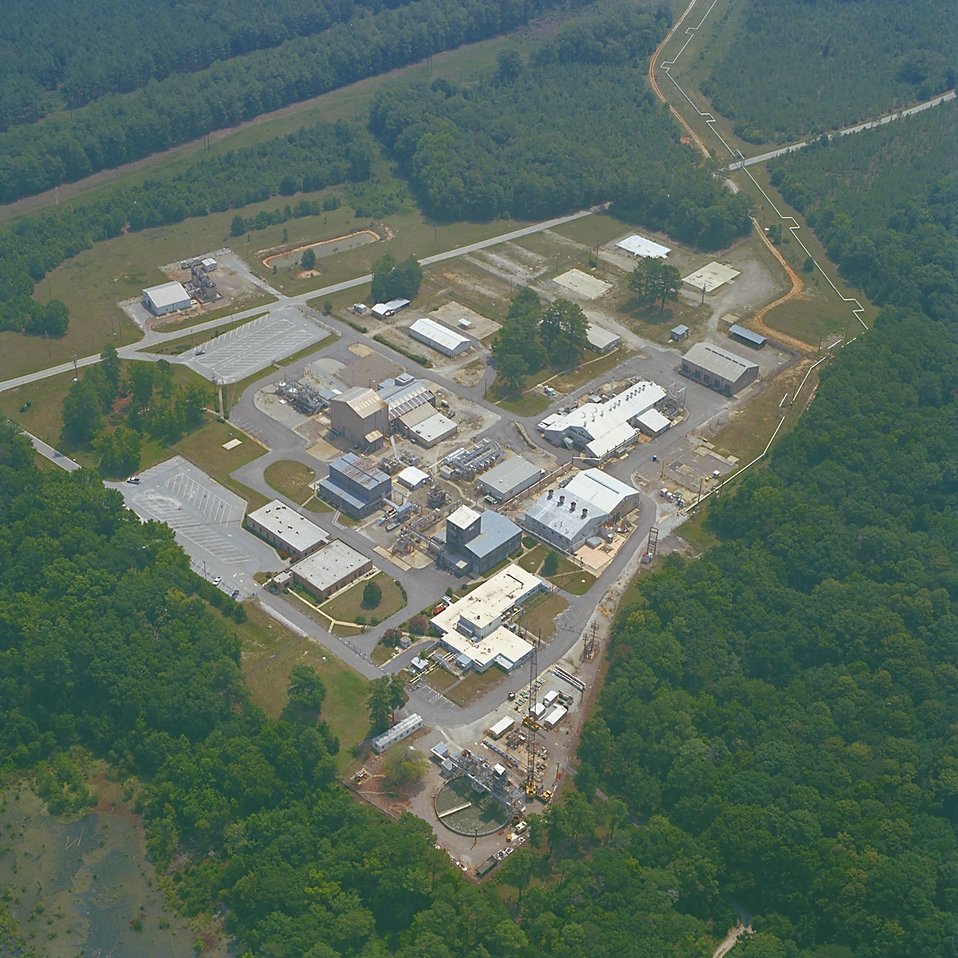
SRS T Area in 2002 (Before)